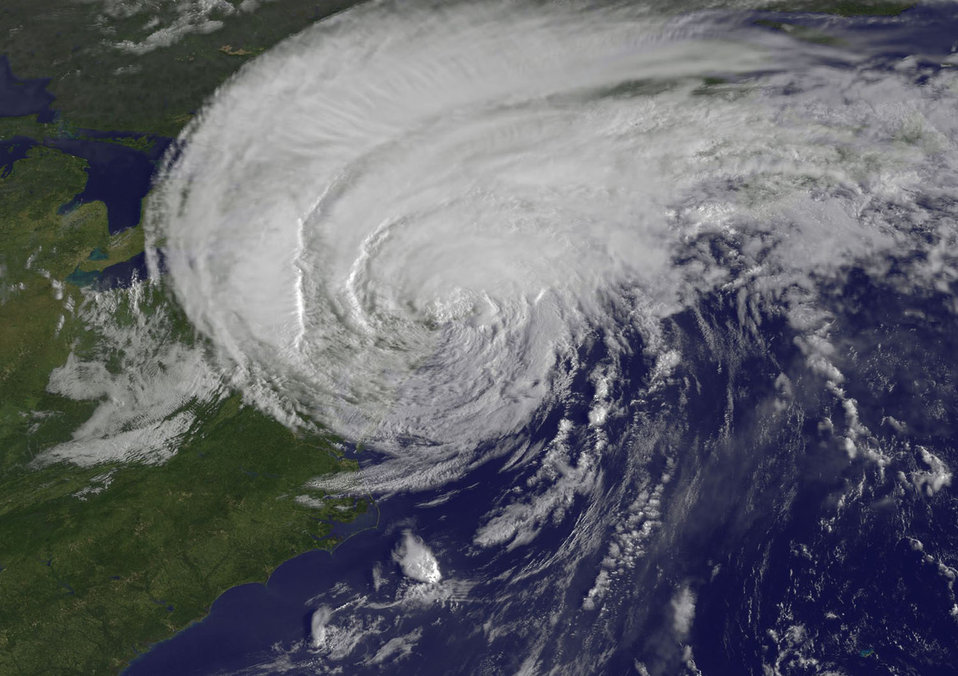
A hurricane

Satellite view of a hurricane.